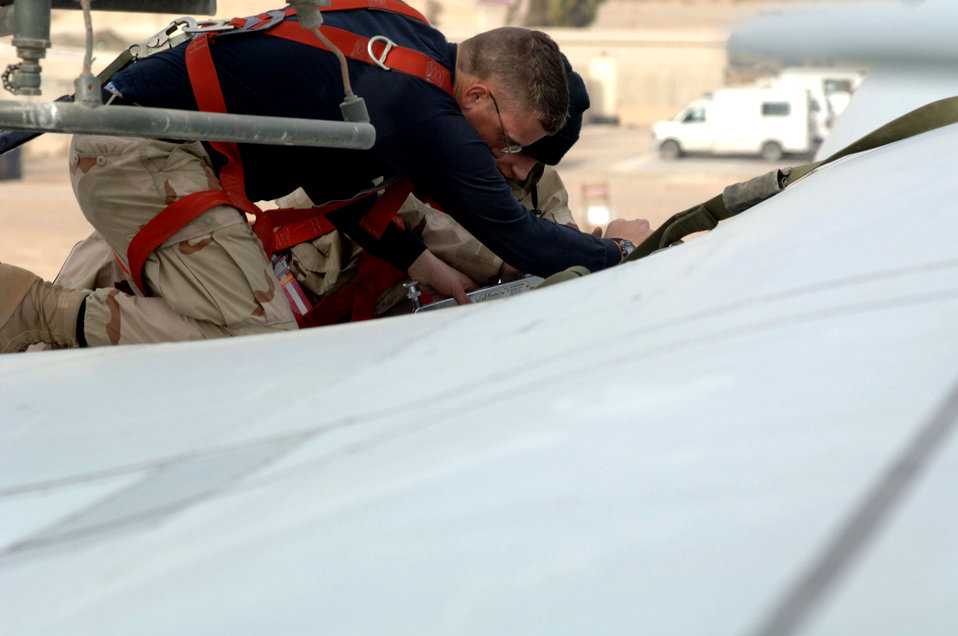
Balad Airmen take on galactic mission

Staff Sgt. Charlton Packham and Airman 1st Class Chris Olmstead remove screws from a C-5 Galaxy Jan. 12 at Balad Air Base, Iraq. Both Airmen are 721st Air Mobility Operations Group Det. 5 maintainers and deployed from Travis Air Force Base, Calif.